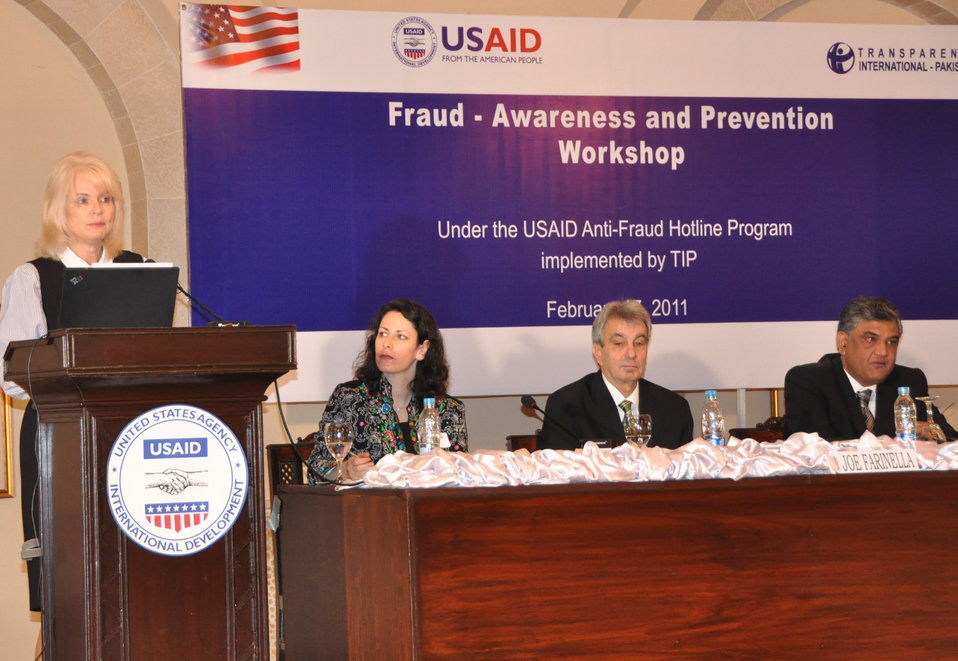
USAID Pakistan–sponsored Fraud Awareness Workshop

Islamabad, February 21, 2011 - Senior Deputy Mission Director Denise Herbol provides welcoming remarks at a USAID/Pakistan–sponsored Fraud Awareness Workshop, which brought together more than 100 implementing partners to help ensure transparency and accountability in the delivery of U.S. assistance to Pakistan.